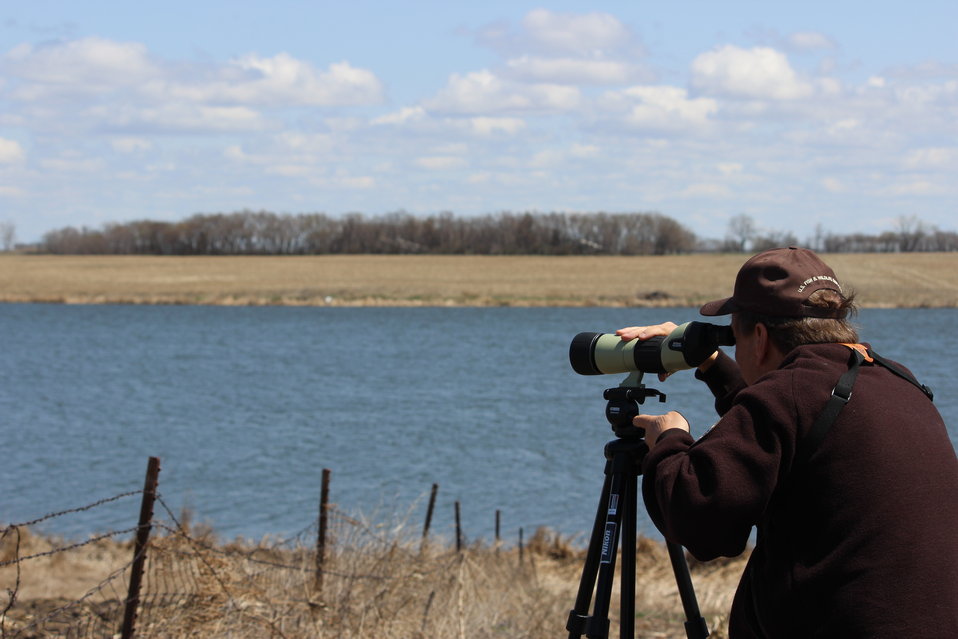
Glassing for Greenheads

Alright, so we're actually looking for more than just Mallards (Greenheads). Each year, the USFWS conducts '4 Square Mile Surveys'. These counts are more officially part of the Waterfowl Breeding Population and Production Estimates Survey.
This survey began in 1987, and plots consisting of a four square mile area were selected throughout the Prairie Pothole Region. Within each of those areas, certain wetlands are identified to be surveyed year after year. The number, species, and sex of waterfowl are recorded as well as the wetland type and fullness. These numbers are combined and tabulated to come up with an estimate of the breeding population of many waterfowl species each year.
In this photo, the Kulm WMD Refuge Manager uses a spotting scope to help identify some divers at the far side of a large wetland in LaMoure County during a survey.